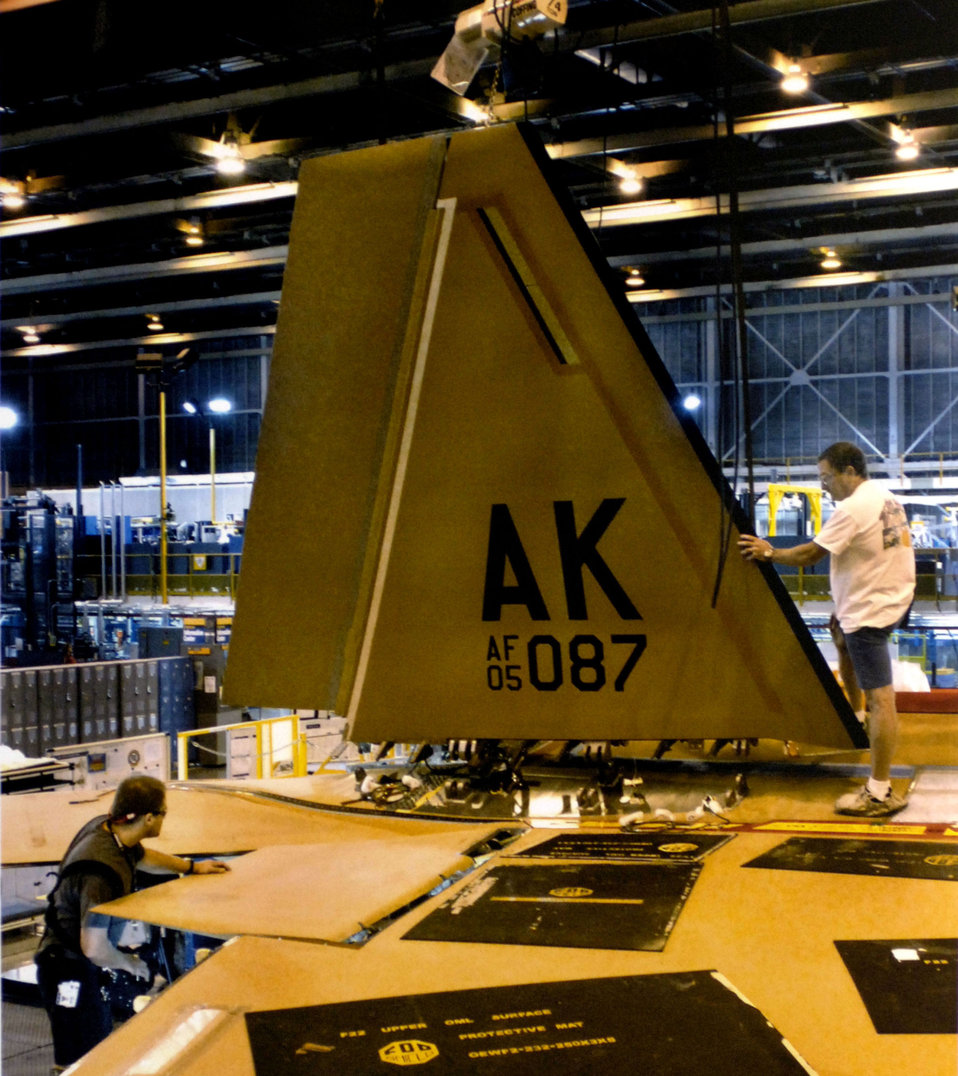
PACAF leaders see flash of future in Georgia

Employees at Lockheed Martin's F-22 Raptor production facility here attach a tail fin to the body of Raptor 4087. The aircraft, the first to bear the